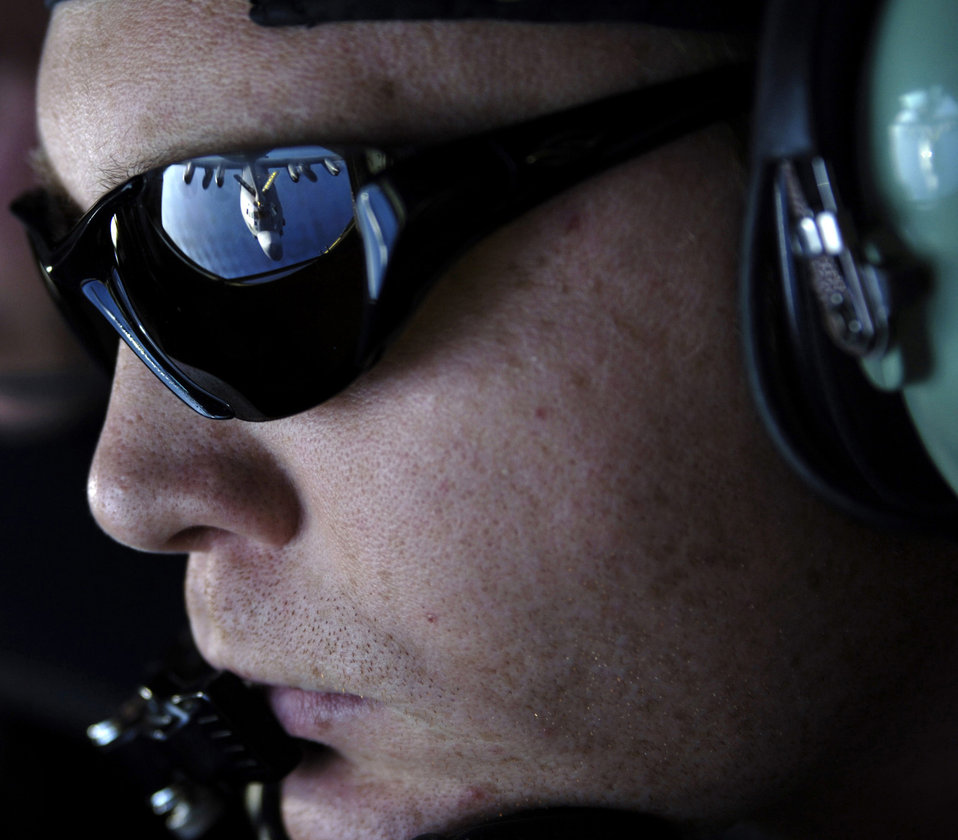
Refuel over the Pacific

ANDERSEN AIR FORCE BASE, Guam (AFPN) -- Staff Sgt. Jeremy Vancil refuels an MC-130 Combat Talon during a refueling mission over the Pacific Ocean. Sergeant Vancil is from the 168th Air Refueling Squadron, Alaska Air National Guard. The 168th is deployed to Andersen as part of the Air and Space Expeditionary Force rotations and is supporting all U.S. aircraft in the Pacific.